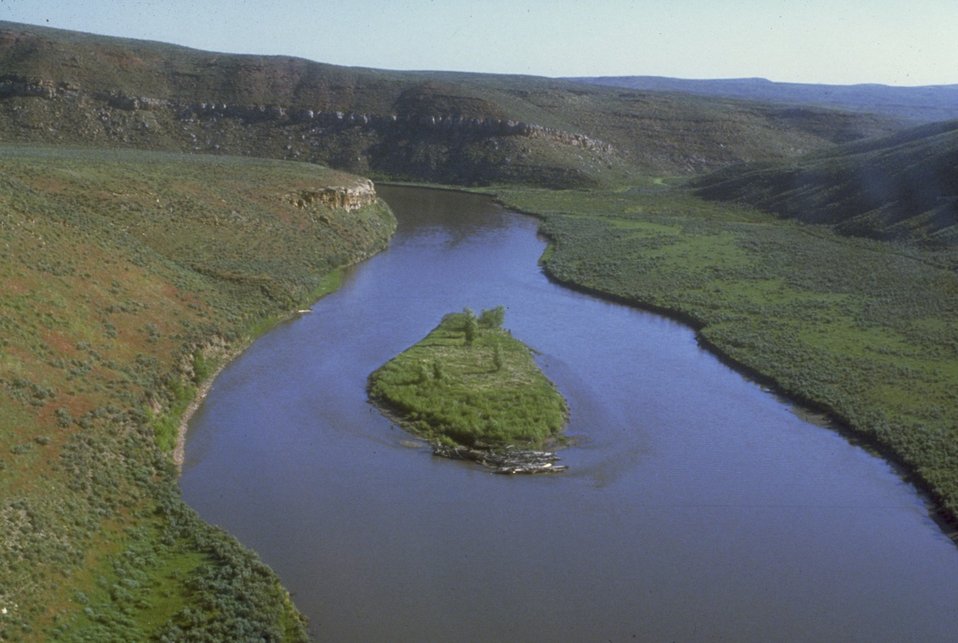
Scenic of the Yampa River.